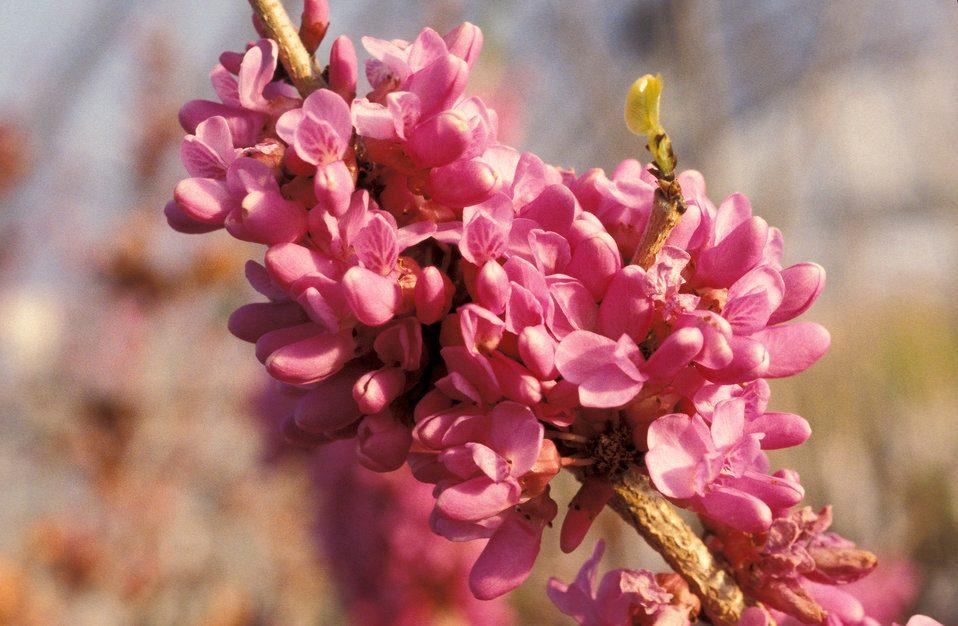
This new Chinese redbud cultivar is named the Don Egolf.